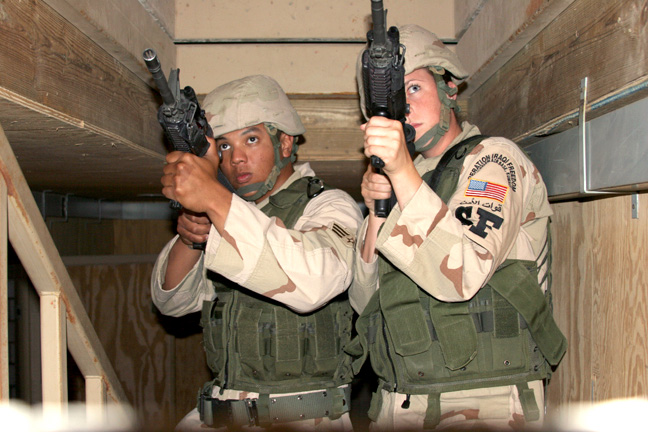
Mission of security forces constantly evolving

Senior Airmen Paris Carman (left) and Ravin Coulon move up the stairs of a simulated Iraqi home during